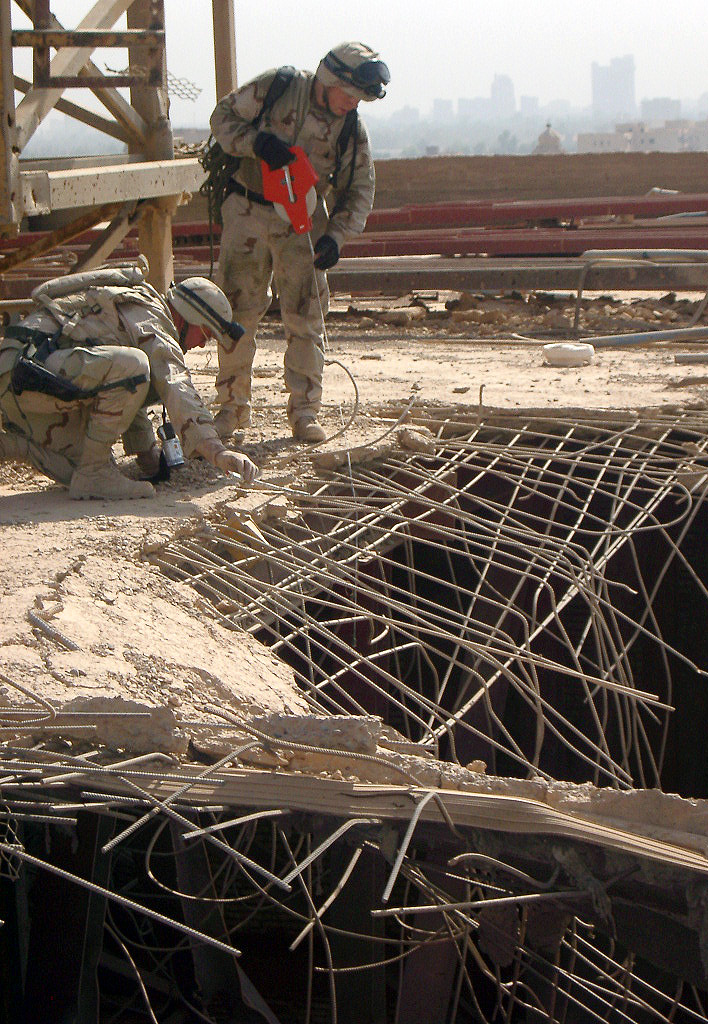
A long way down

BAGHDAD, Iraq -- Staff Sgt. Zach Porter (standing) and Capt. Mitch Simmons collect data from a coalition precision-guided munition strike. The roof of the Ba'ath Party headquarters building was hit during Operation Iraqi Freedom. The airmen are among nearly 100 experts of the Combined Weapons Effectiveness Assessment Team. The team has visited more than 100 of a planned 500 sites to assess how well coalition weapons achieved their intended effects during Operation Iraqi Freedom. It will report its findings to U.S. Central Command this fall.